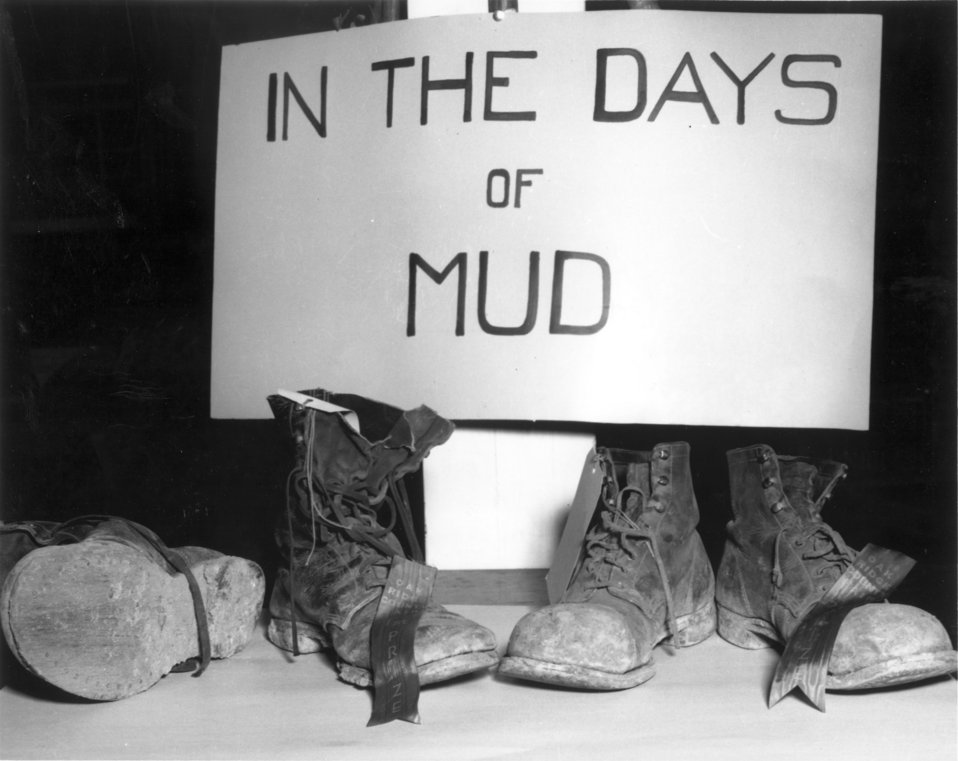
Mud Days Oak Ridge

1120 DOE photo by Ed Westcott

Mud Days 9/1945